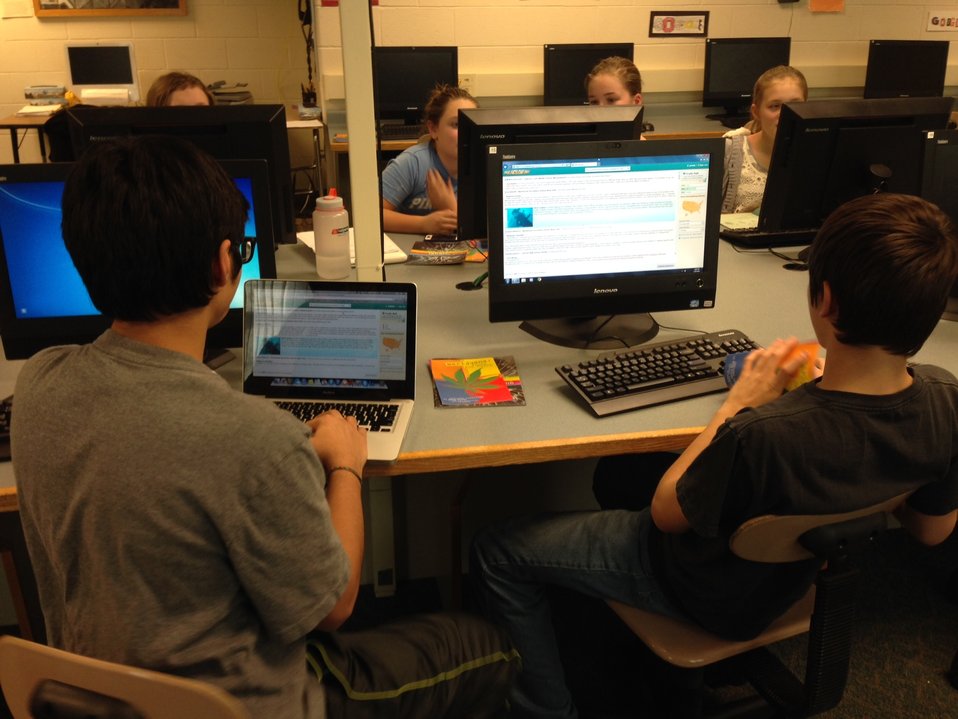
Chat Day at Strong Middle School in Durham, Connecticut